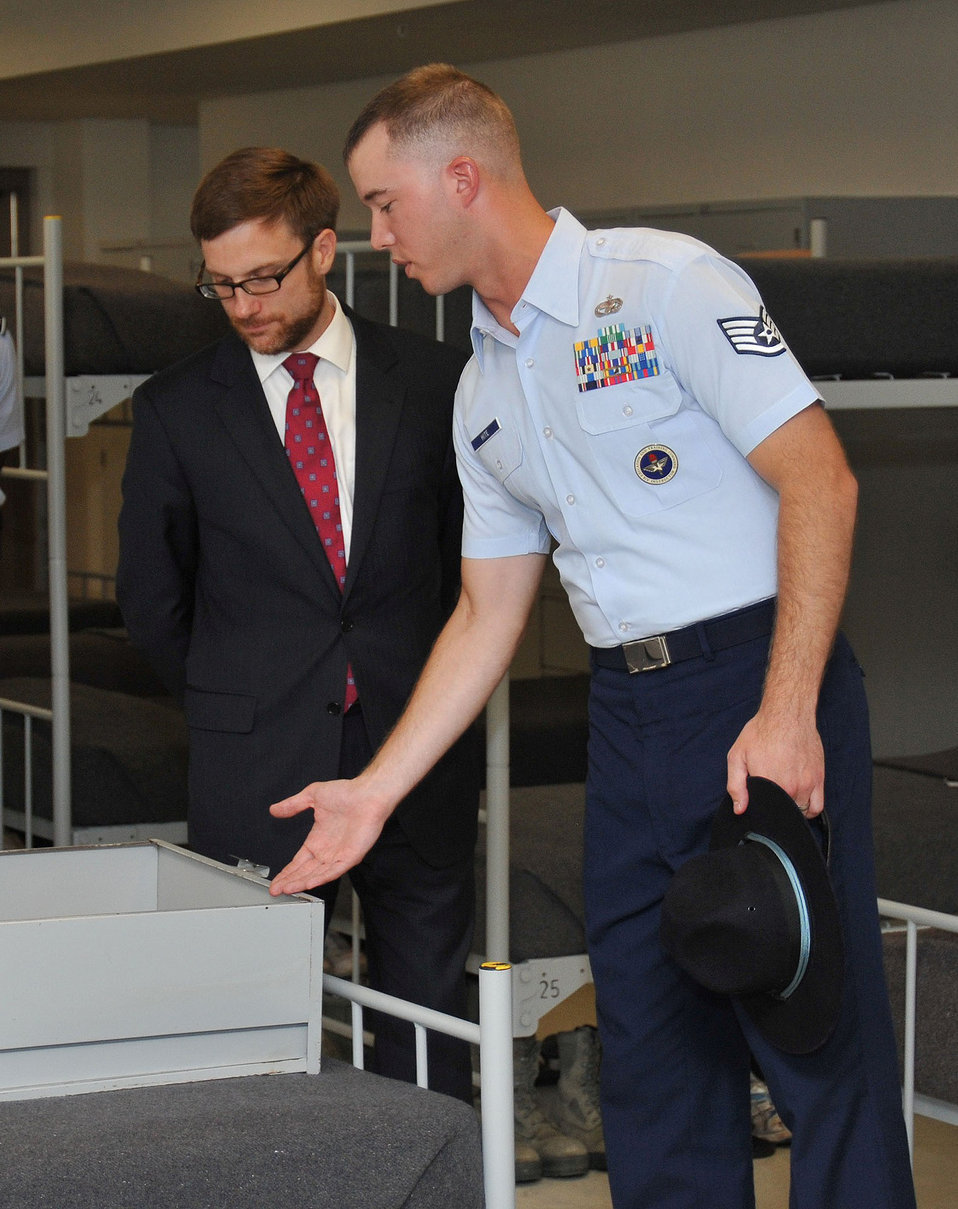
Under Secretary Visit

Staff Sgt. Joshua Hite provides Acting Under Secretary of the Air Force Dr.Jamie Morin an orientation of the Air Force Basic Military Training campus July 30, 2012, at Joint Base San Antonio-Lackland Air Force Base, Texas. During a visit to San Antonio, Morin met with BMT officials, toured trainee living quarters, and talked with current trainees. Hite is a military
training instructor who has earned